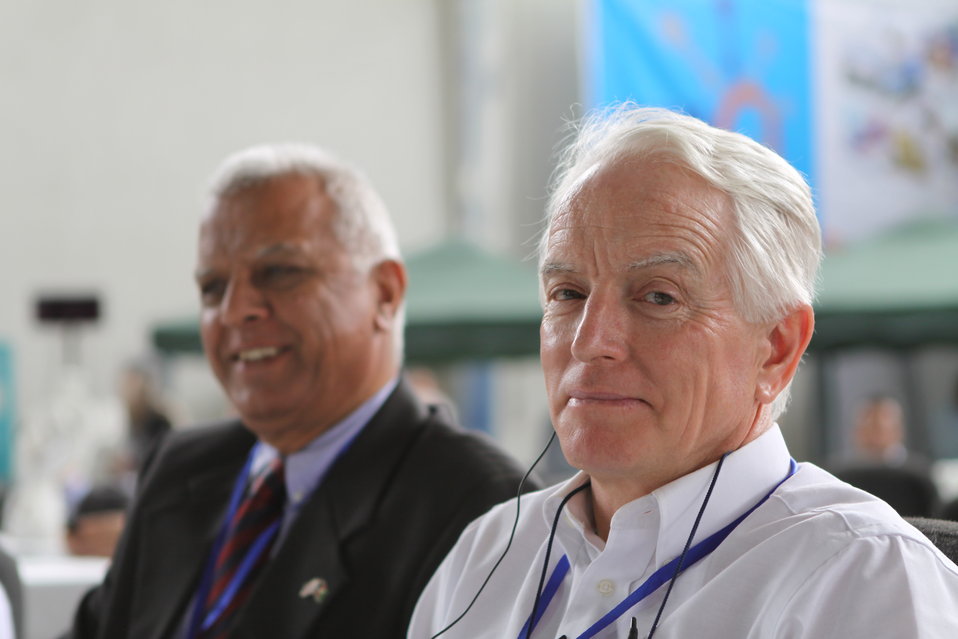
100525 Hirat Marble Conference 187